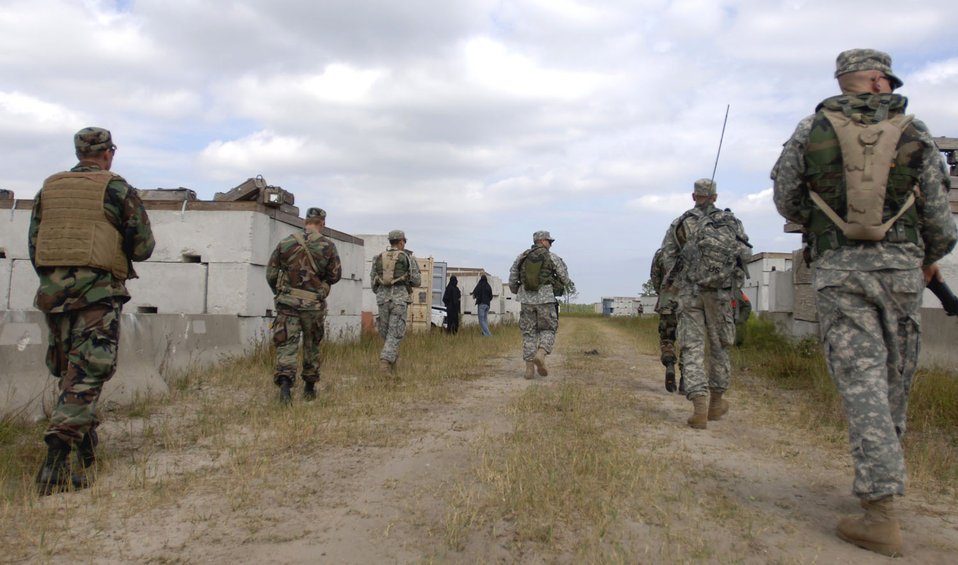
Atlantic Strike provides joint training for interdependent warfighters

Joint Terminal Attack Contollers cordon and search a simulated hostile environment during the predeployment training event called Atlantic Strike IV at Avon Park, Fla., Oct. 23. Atlantic Strike includes more than 700 joint participants in seven days of training operations.